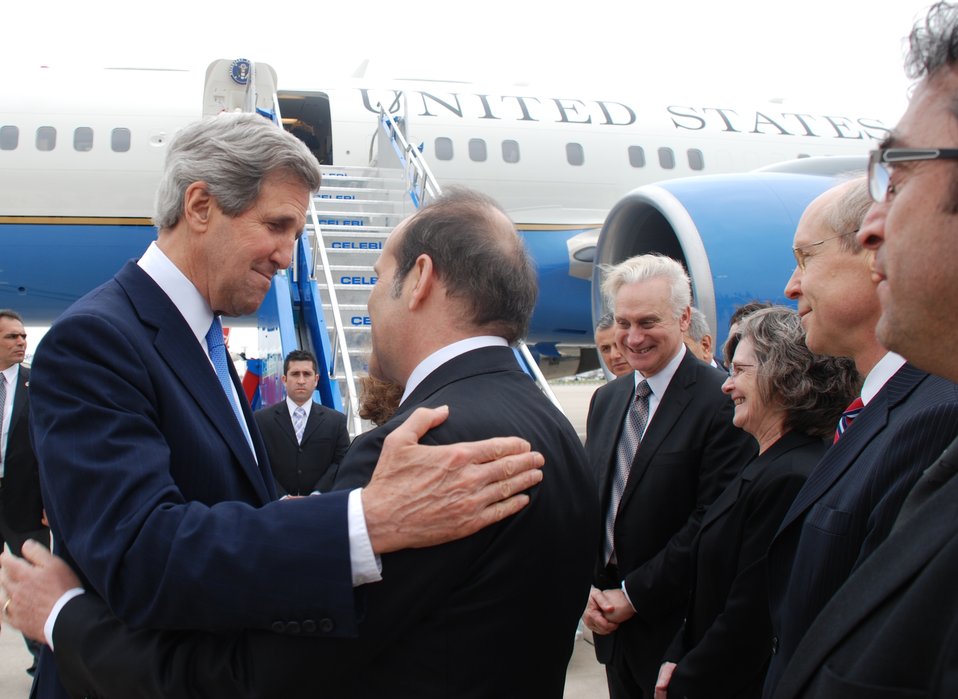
Secretary Kerry Departs Istanbul, Turkey

U.S. Secretary of State John Kerry says farewell to U.S. Ambassador Francis Ricciardone, Dr. Marie Ricciardone, Consul General Scott Kilner, and Atatürk Airport administration members, before his departure at Atatürk Airport, Istanbul, Turkey, April 7, 2013.